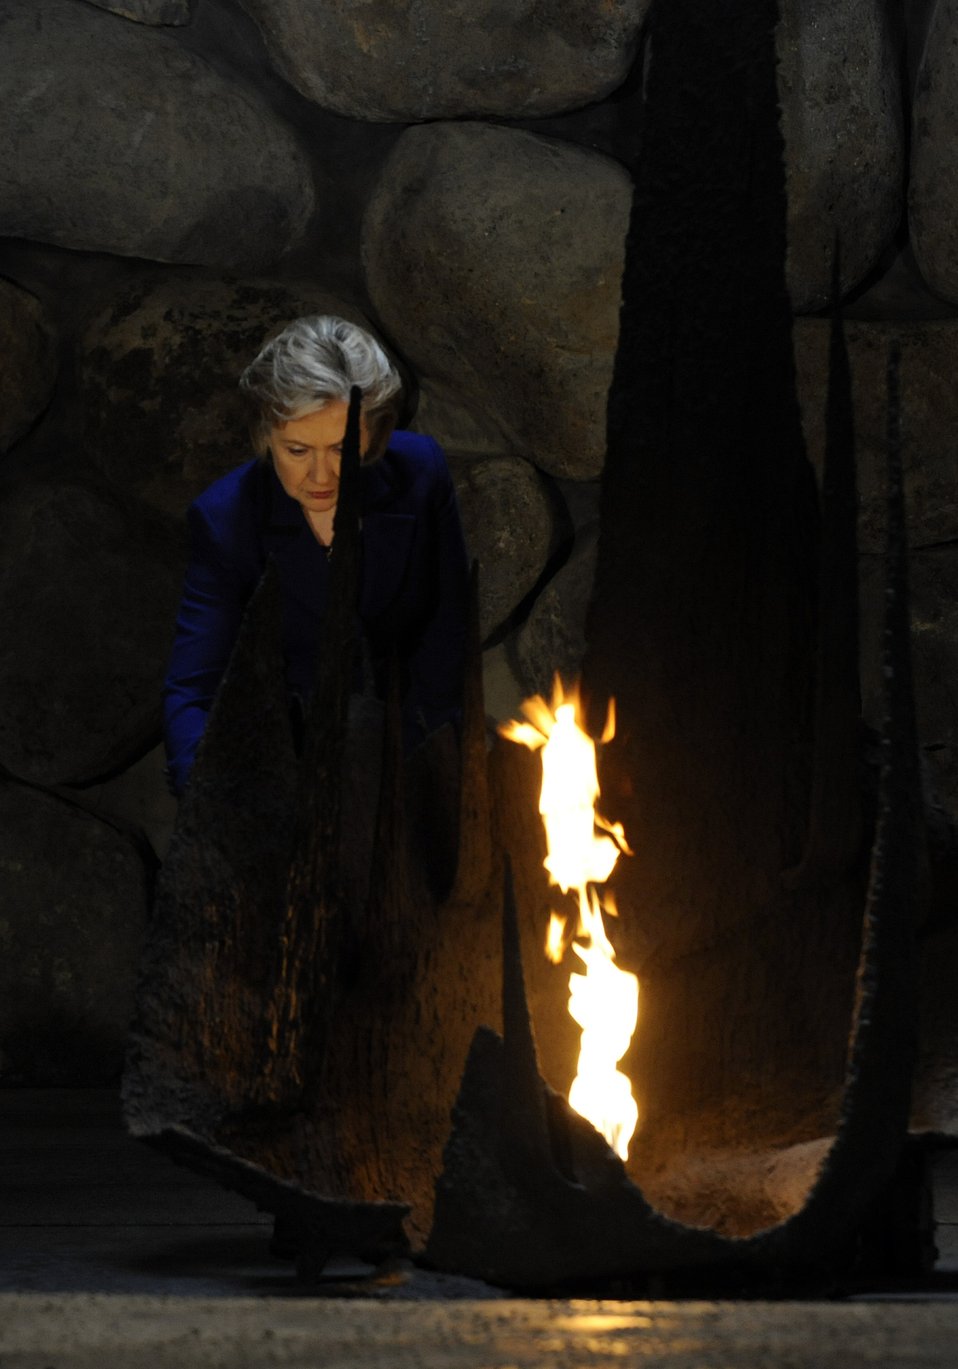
Secretary Clinton Lays a Wreath in the Hall of Remembrance

U.S. Secretary of State Hillary Clinton relights the eternal flame and lays a wreath in the Hall of Remembrance in Jerusalem March 3, 2009.